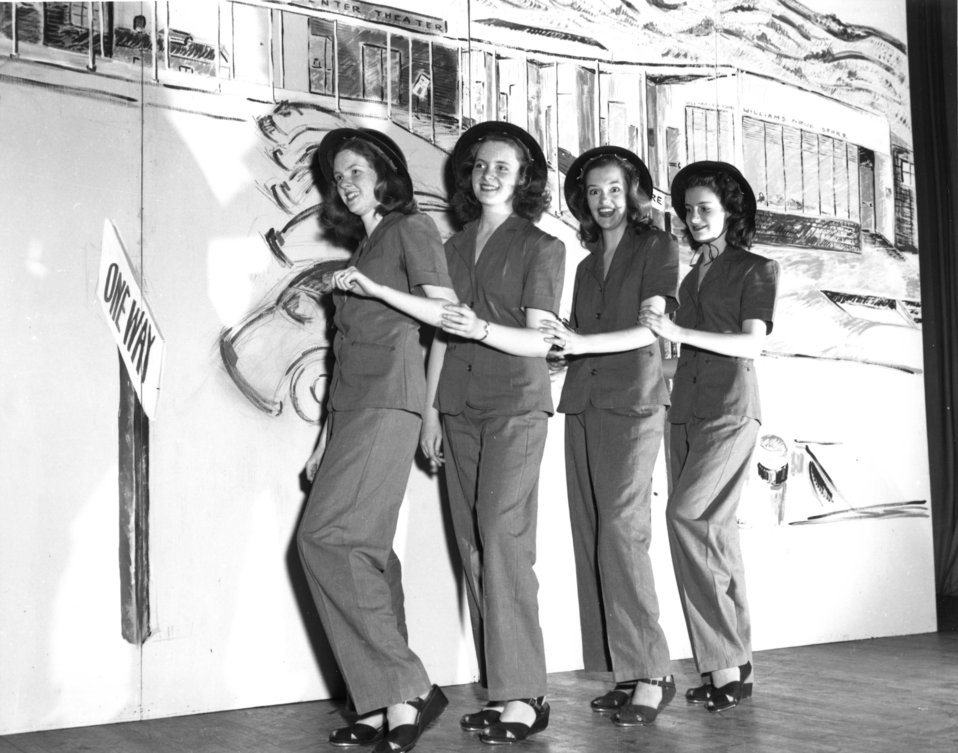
Recreation at Oak Ridge